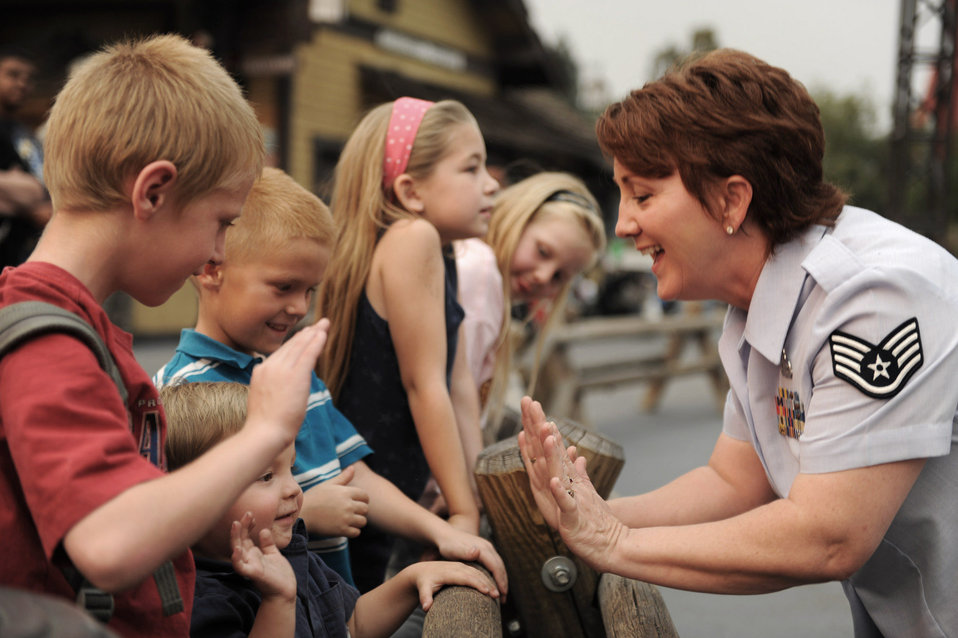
Give me five!

Staff Sgt. Erin McPherson gets ready to high-five children at Knott's Berry Farm Nov. 15 near Los Angeles. Sergeant McPherson is a vocalist of the Air National Guard Band of The Southwest. The band is performing during Air Force Week-Los Angeles.